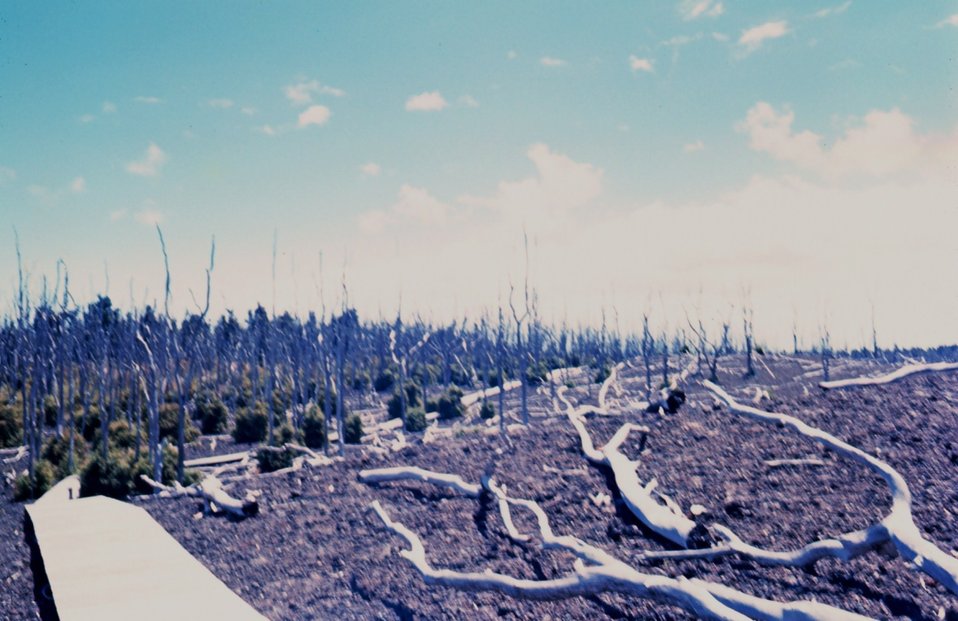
Dead trees are seen over recent lava flow while regrowing vegetation marks the boundary between an older flow and the more recent one.